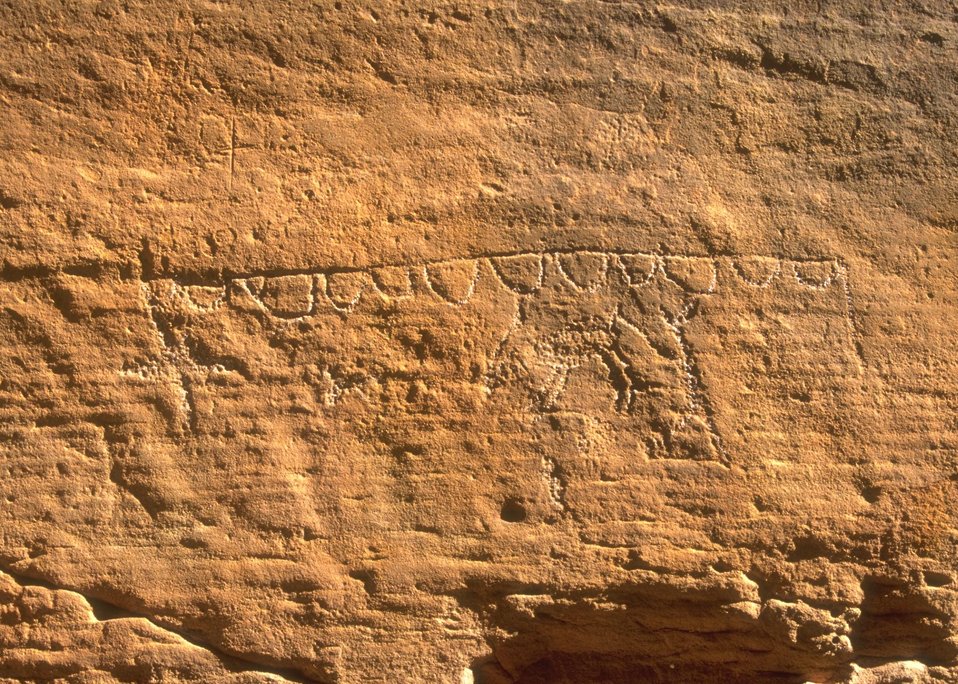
Petroglyph panel in Whoopup Canyon, Newcastle Field Office.